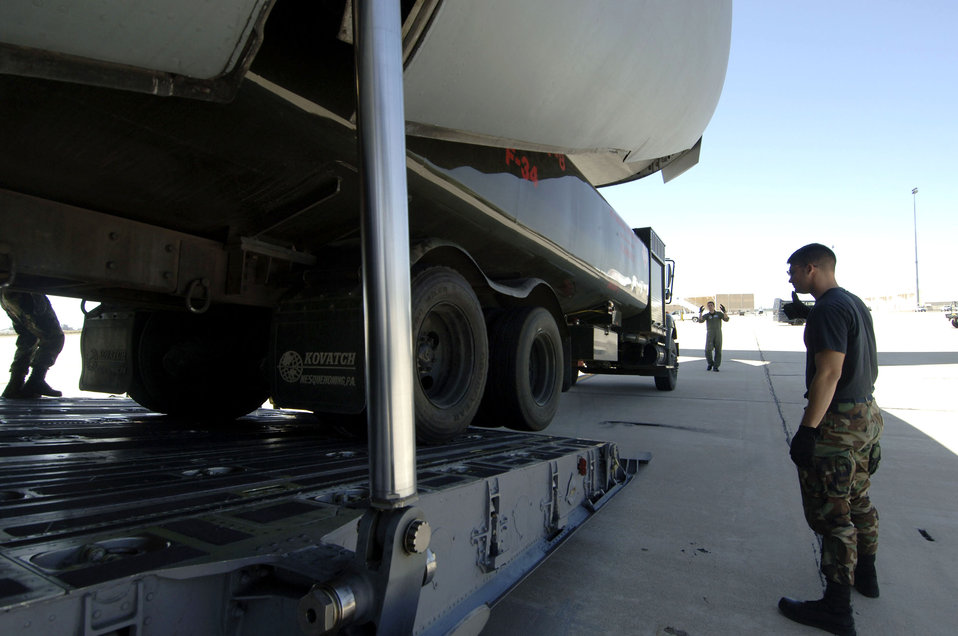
Charleston Airmen train Davis-Monthan loadmasters

A Charleston Air Force Base, S.C., loadmaster trains augmentee loadmasters on how to properly load a vehicle onto a C-17 Globemaster III April 28 at Davis-Monthan AFB, Ariz.